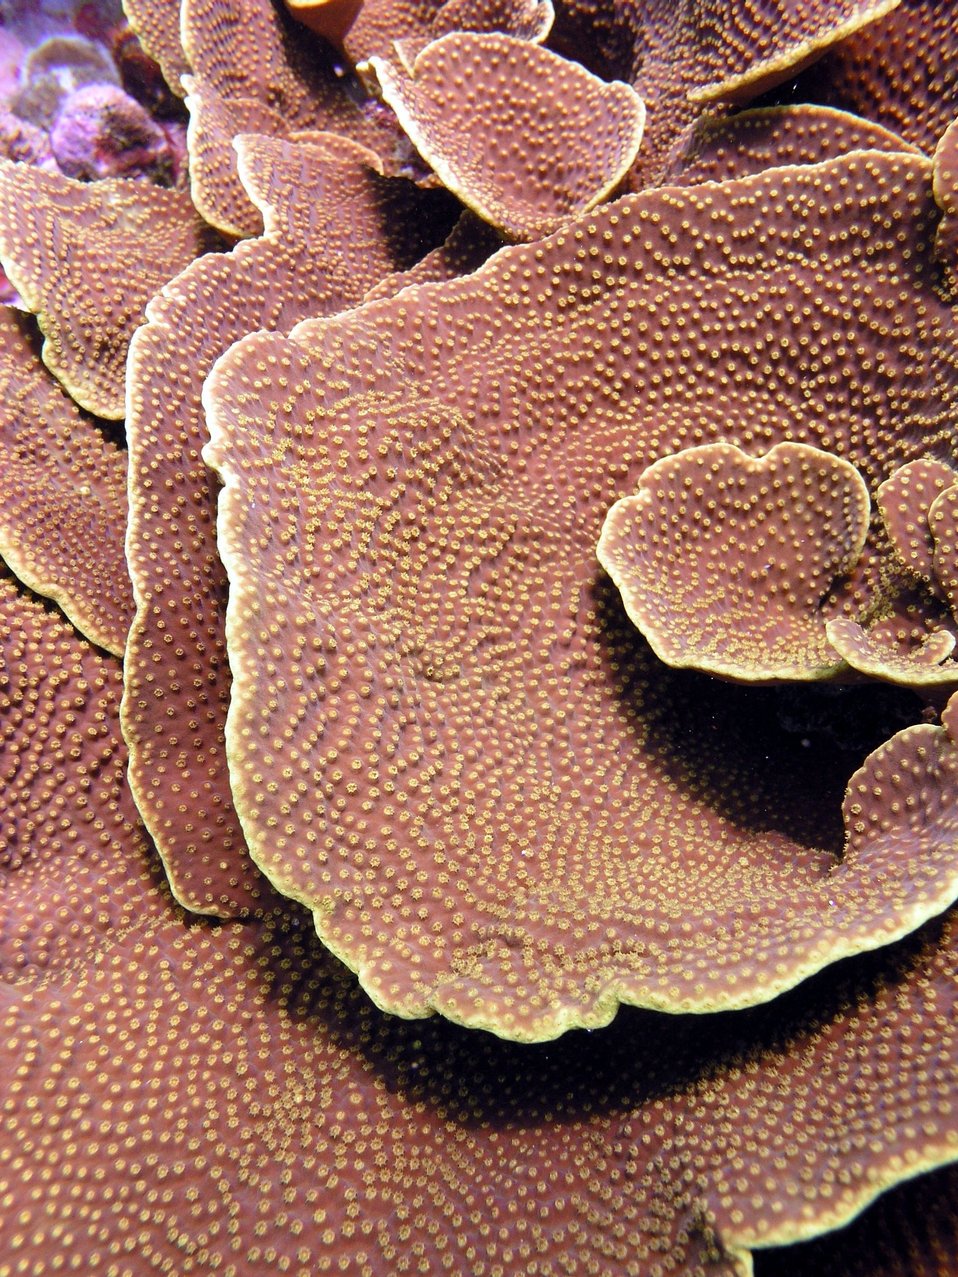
Cabbage coral